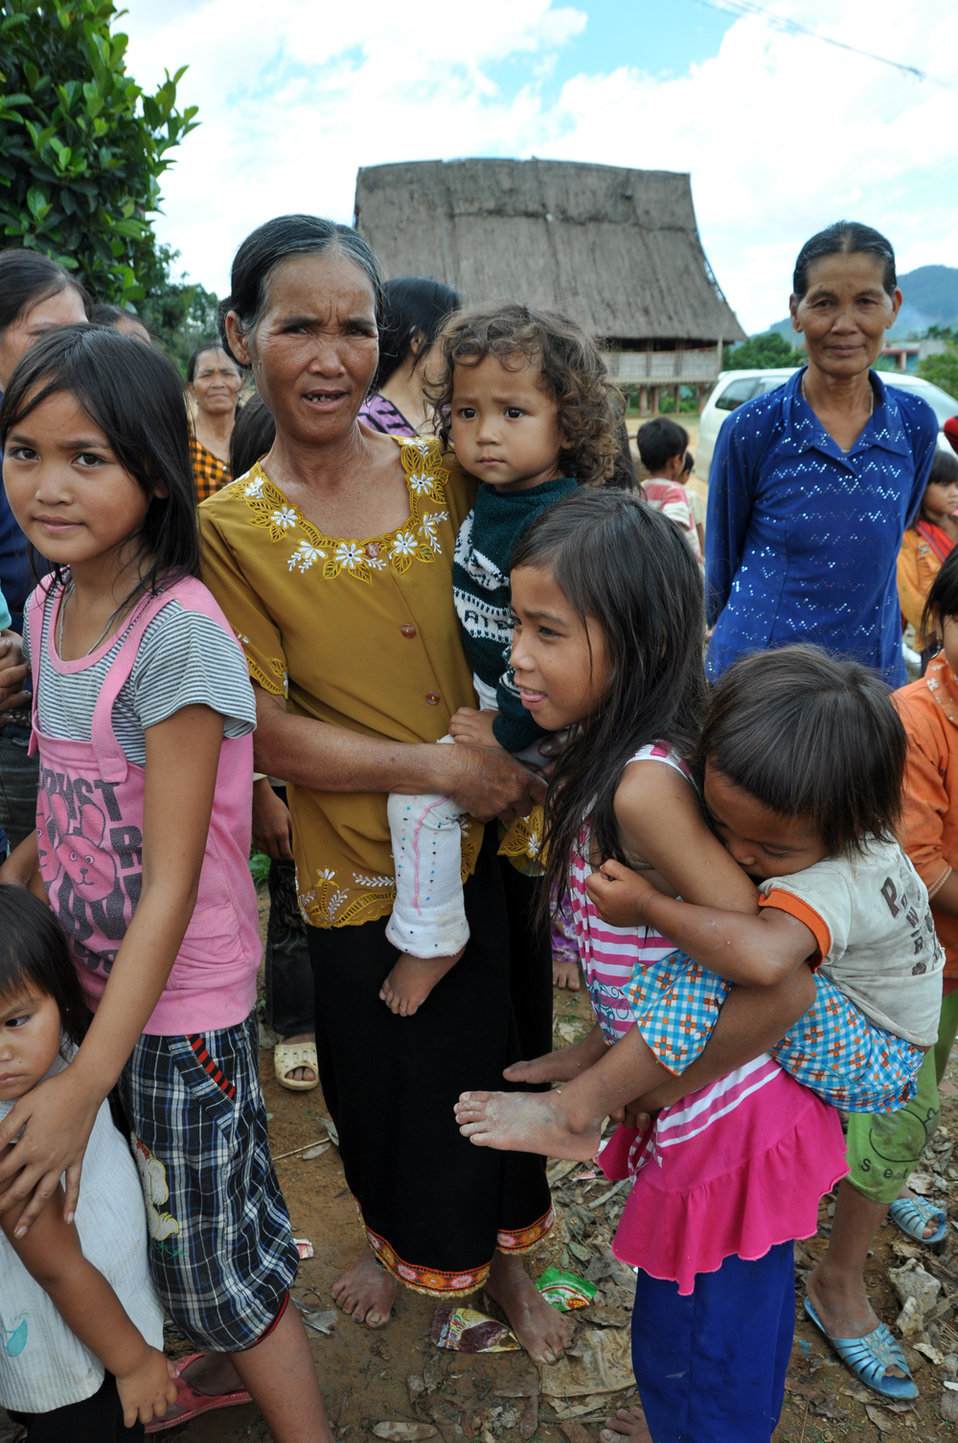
USAID contributes to refurbished pre-schools and teacher training in Vietnam